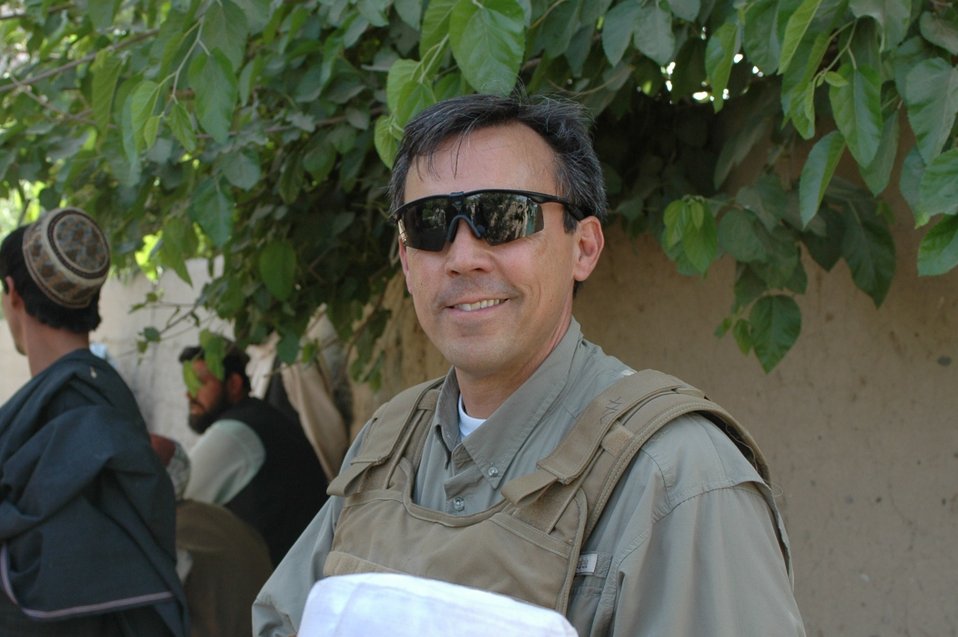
Dr Shah Visits Argandab April 10, 2010